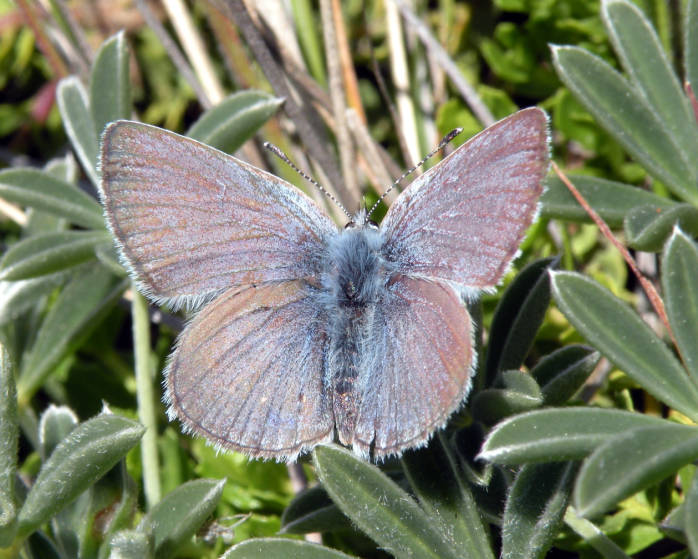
Mission Blue Butterfly (endangered)

Photo credit: Stuart Weiss

A stunning, close-up view of a mission blue butterfly. This species was added to the Endangered Species list on June 8, 1976.